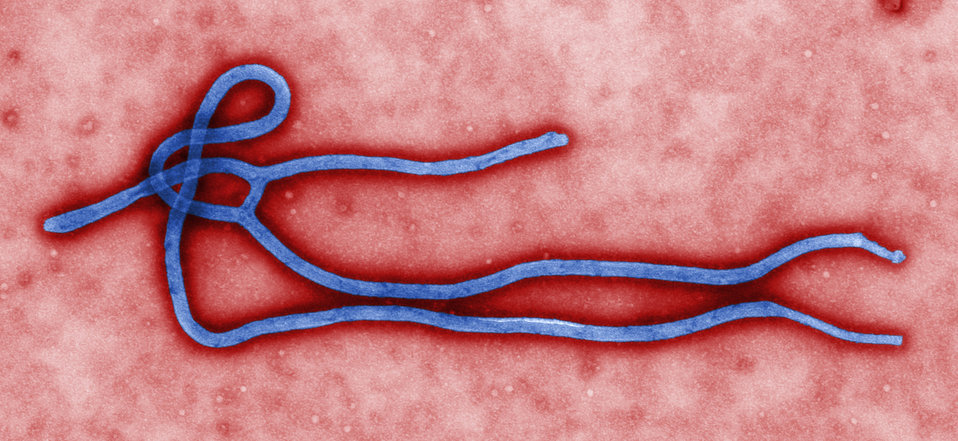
Created by CDC microbiologist Cynthia Goldsmith, this colorized transmission electron micrograph (TEM) revealed some of the ultrastructural morphology displayed by an Ebola virus virion. See PHIL 1832 for a black and white version of this image.